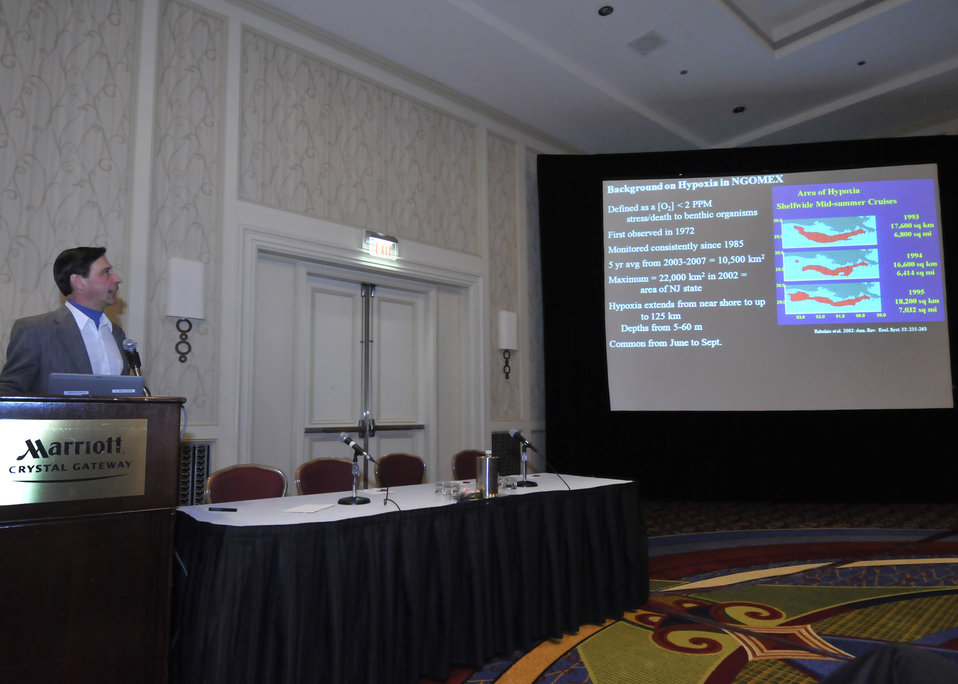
Nathaniel Ostrom, Professor and Graduate Program Director, Department of Zoology, Michigan State University, East Lansing, Michigan discusses the effects of oil and hypoxia after the gulf oil spill in the Gulf of Mexico at the at the World Agricultural Outlook Board Forum in Crystal City, VA, Thursday, February 24, 2011.